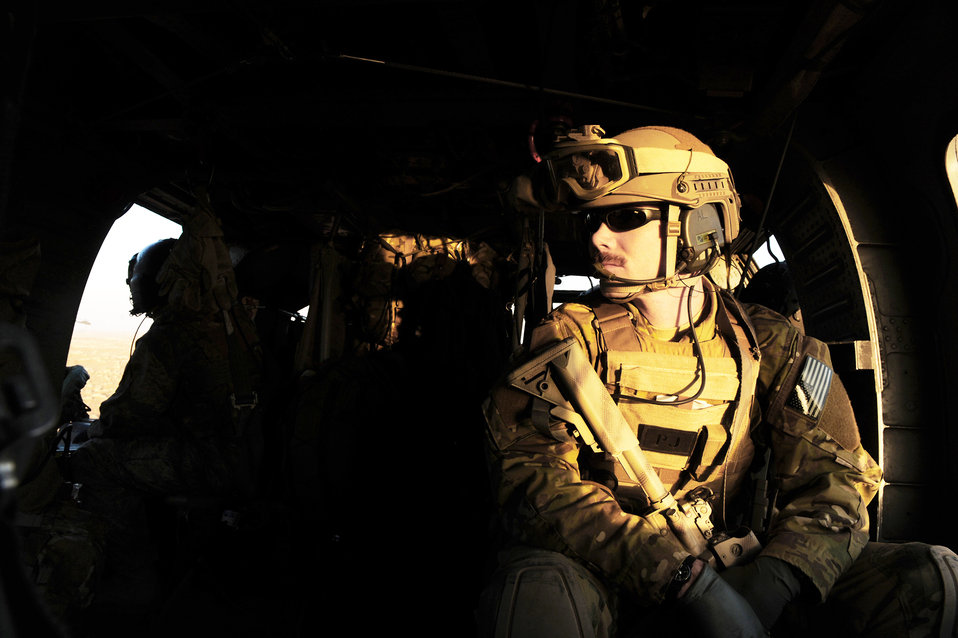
Total-Force Airmen to the rescue in Afghanistan

Staff Sgt. Demian Abel scans the horizon for potential threats to his HH-60G Pave Hawk crew during a medical evacuation mission, Jan. 10, 2010, over Kandahar Province, Afghanistan. Sergeant Abel is a pararescueman with the 66th Expeditionary Rescue Squadron.